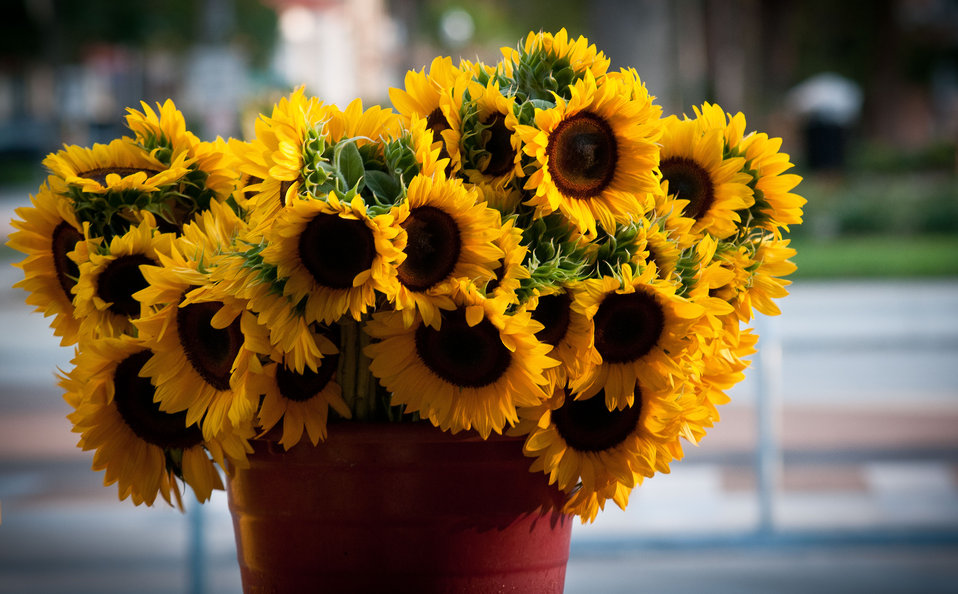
Worden Farm (www.wordenfarm.com) fresh picked organic sunflowers (decorative and edible) are ready for sale at the Saturday Morning Market, in St. Petersburg, FL, on April 14, 2012. Worden Farm is a family farm that provides certified organic produce to Southwest Florida through community supported agriculture (CSA) membership programs and retail sale at several farmer’s (community) markets. Chris Worden, Ph.D. and Eva Worden, Ph.D. founded and operates the farm that employs more than 20 people. Growing certified organic crops in the coastal sandy soil has required them to develop innovative farming techniques which help the farm as well as assist the studies of universities and farm industry. There are several Worden Farm apprenticeships that provide hands-on training in all aspects of the farm, to include direct marketing at the Saturday Morning Market, or other market sites. The farm also holds culinary and gardening workshops, and other interactive educational events. One of their organic certifications is from the U.S. Department of Agriculture (USDA) and they have partnered with the USDA Natural Resources Conservation Service (NRCS) for soil conserving windbreaks and long tunnel structures to nurture seedlings and extend the growing season.